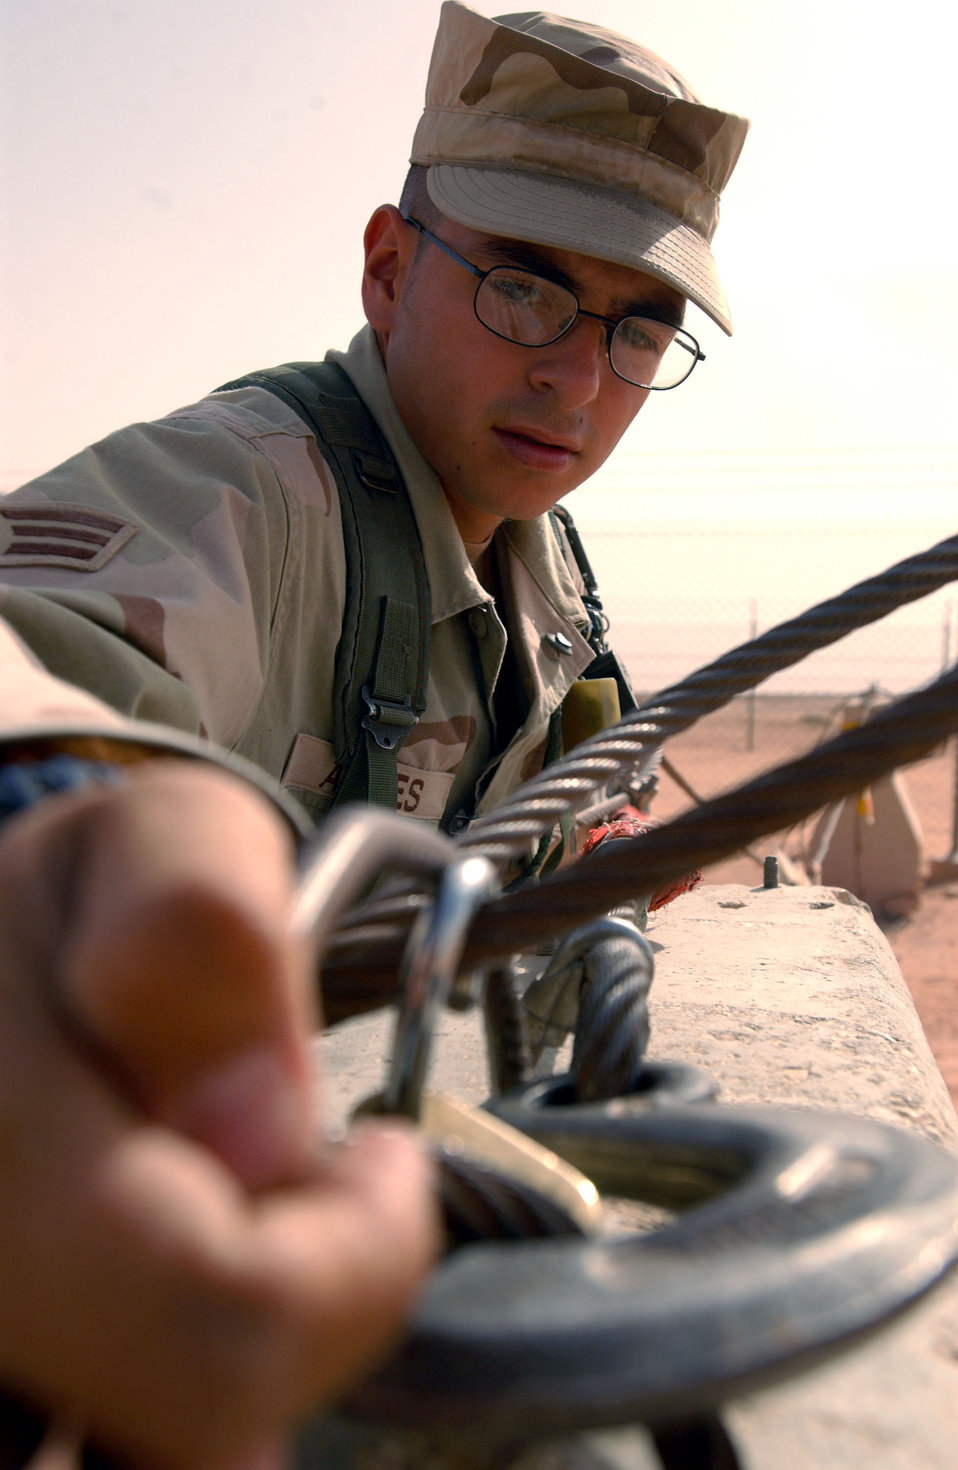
Aceves

OPERATION IRAQI FREEDOM -- Senior Airman Richard Aceves, a security forces journeyman deployed from the 163rd Air Reserve Squadron, March Air Force Base, Calif., to the 363rd Expeditionary Security Forces Squadron, opens a locked gate to a perimeter road on April 4. The 363rd ESFS members work around the clock performing force protection measures, air base defense, and protecting personnel in support of Operation Iraqi Freedom at a forward deployed location in Southwest Asia.